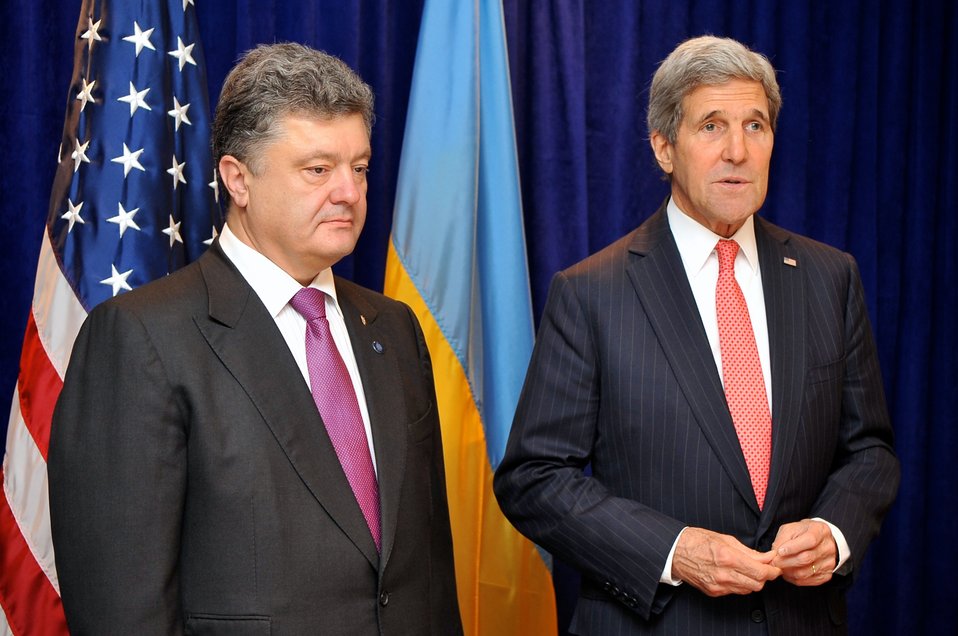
Secretary Kerry, Ukrainian President-elect Poroshenko Address Reporters Before Meeting in Warsaw

U.S. Secretary of State John Kerry and Ukrainian President-elect Petro Poroshenko address reporters before a discussion that preceded Poroshenko's meeting with President Obama in Warsaw, Poland, on June 4, 2014.